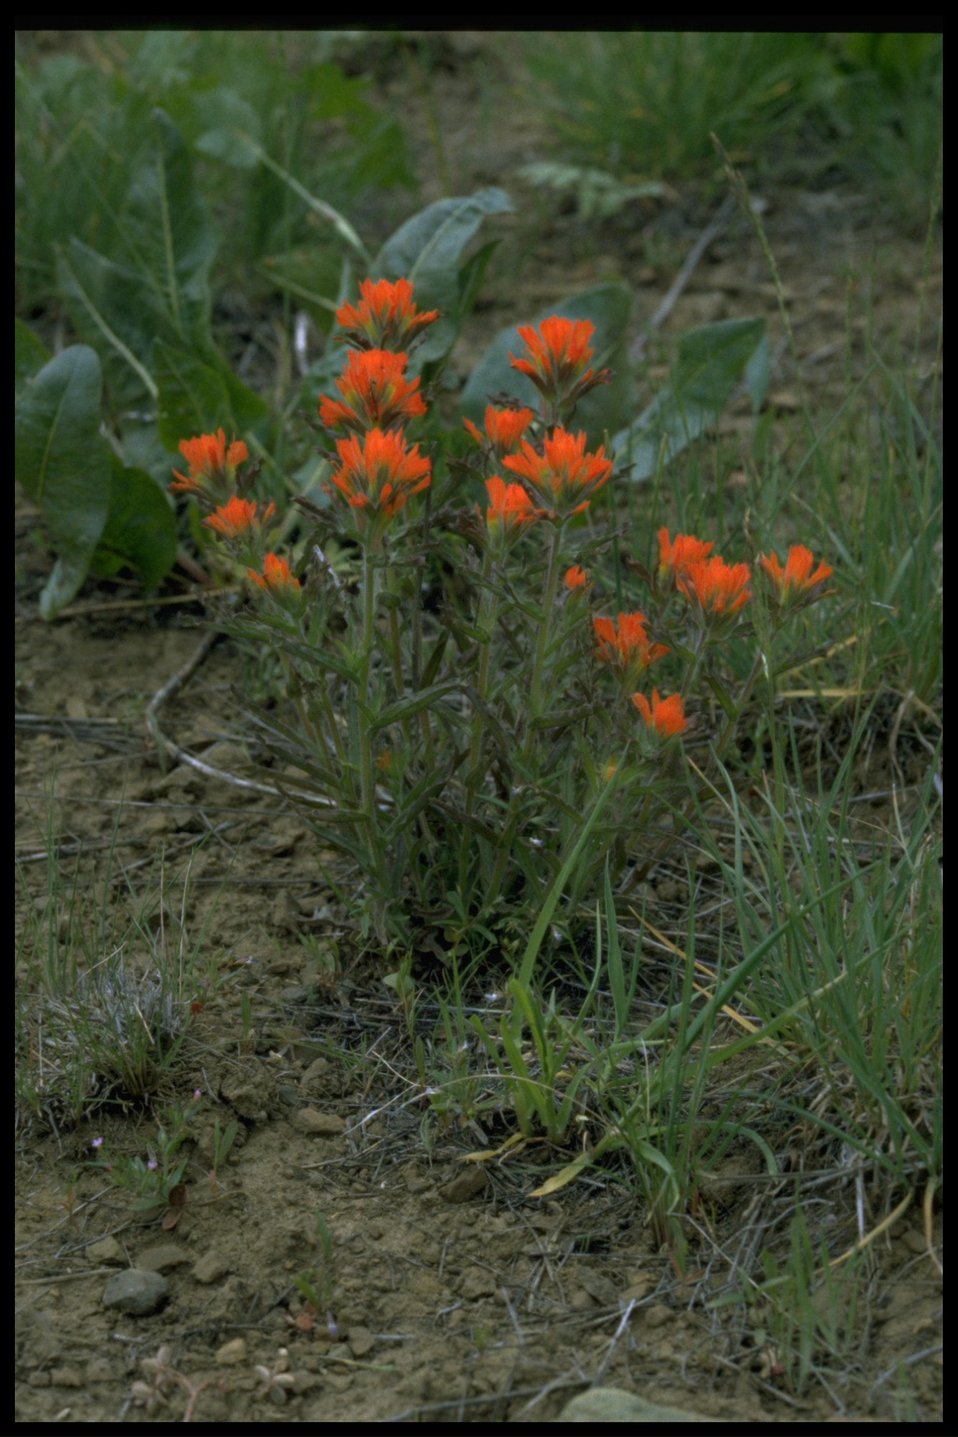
Farshot of wavyleaf Indian paintbrush (Castilleja applegatei).